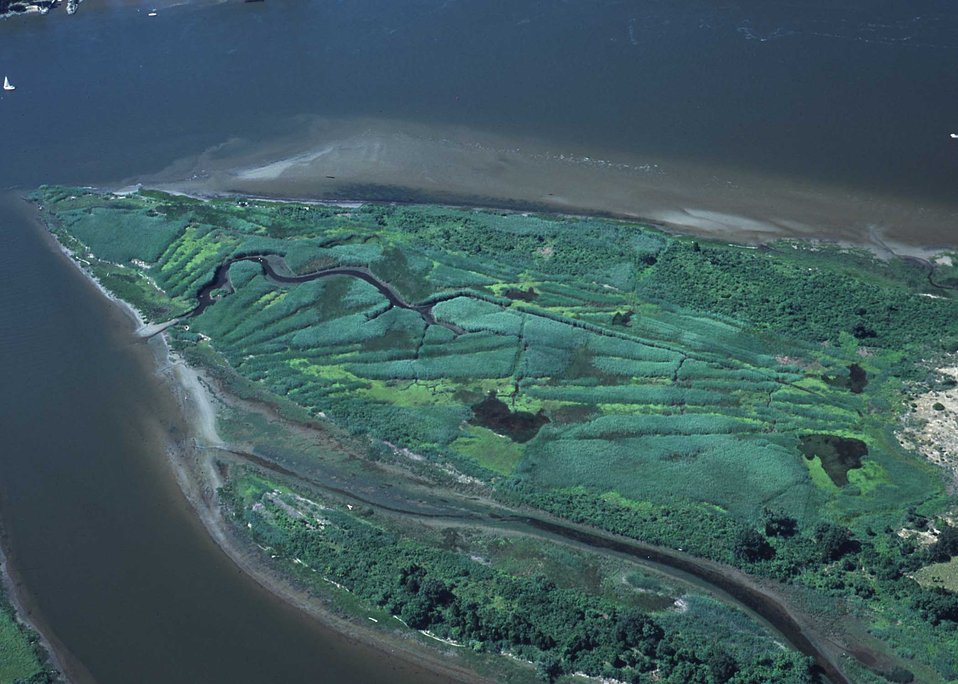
Connecticut River tideland habitat undergoing invasive plant control and native plant community restoration.